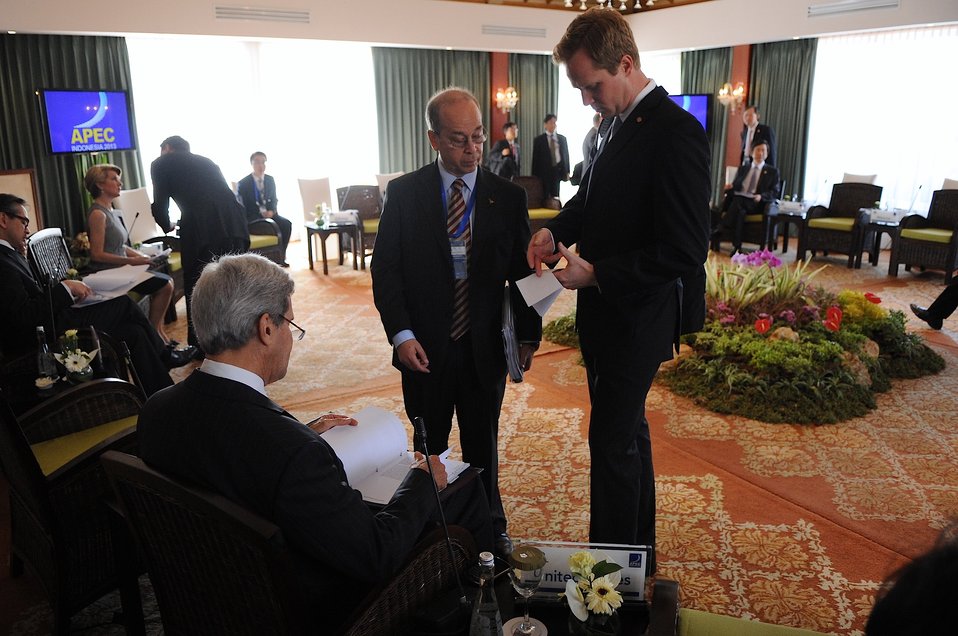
Secretary Kerry Speaks With Assistant Secretary Russell During APEC Meetings in Indonesia

U.S. Secretary of State John Kerry consults with Assistant Secretary of State East Asian and Pacific Affairs and Senior Aide Jason Meininger before a session of the APEC Ministers meeting in Bali, Indonesia, on October 5, 2013.